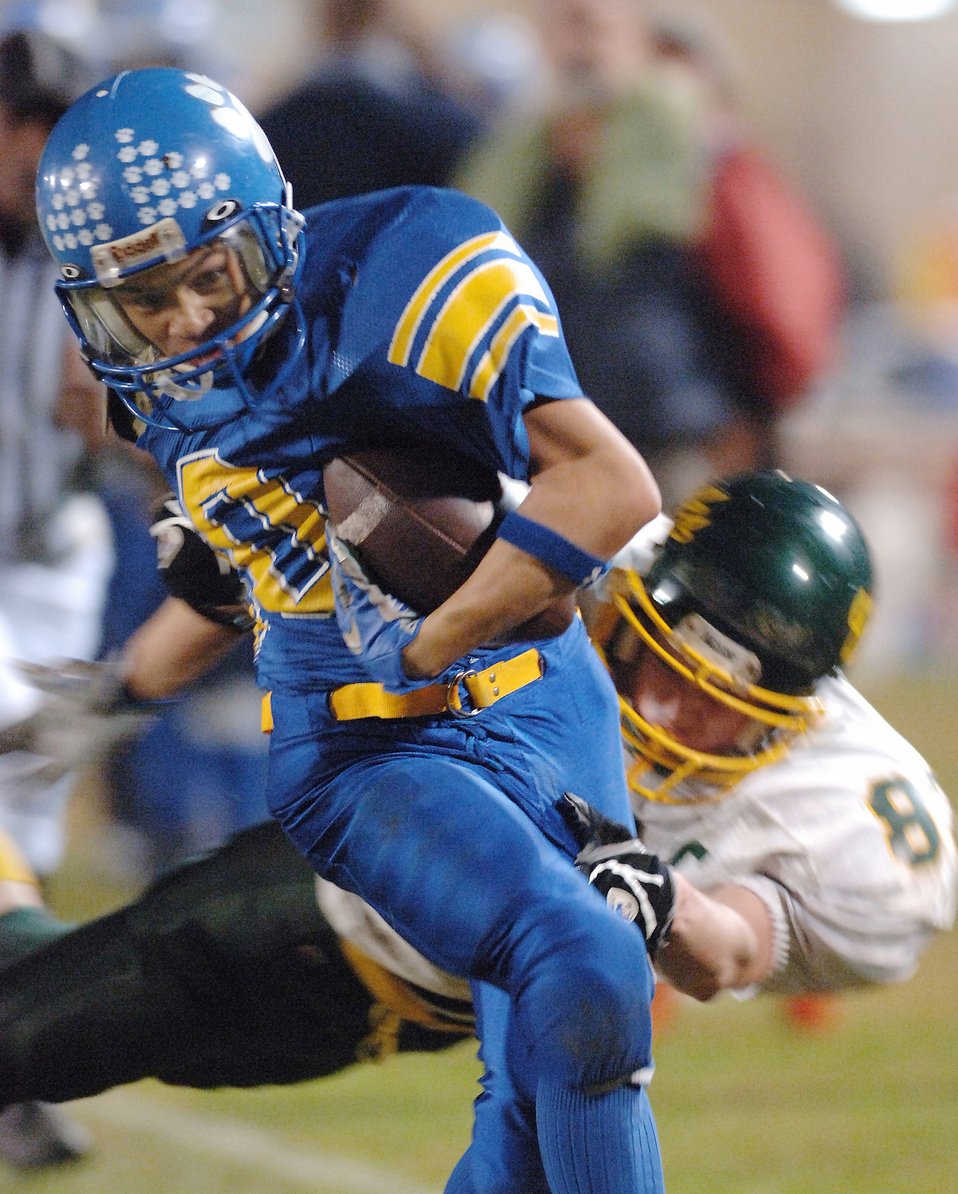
Football frenzy

YOKOTA AIR BASE, Japan (AFPN) -- Running back Patrick Pamintuan of Yokota High School heads for the goal line during a game with the team from Edgren High School at Misawa Air Base, Japan. The Panthers won their